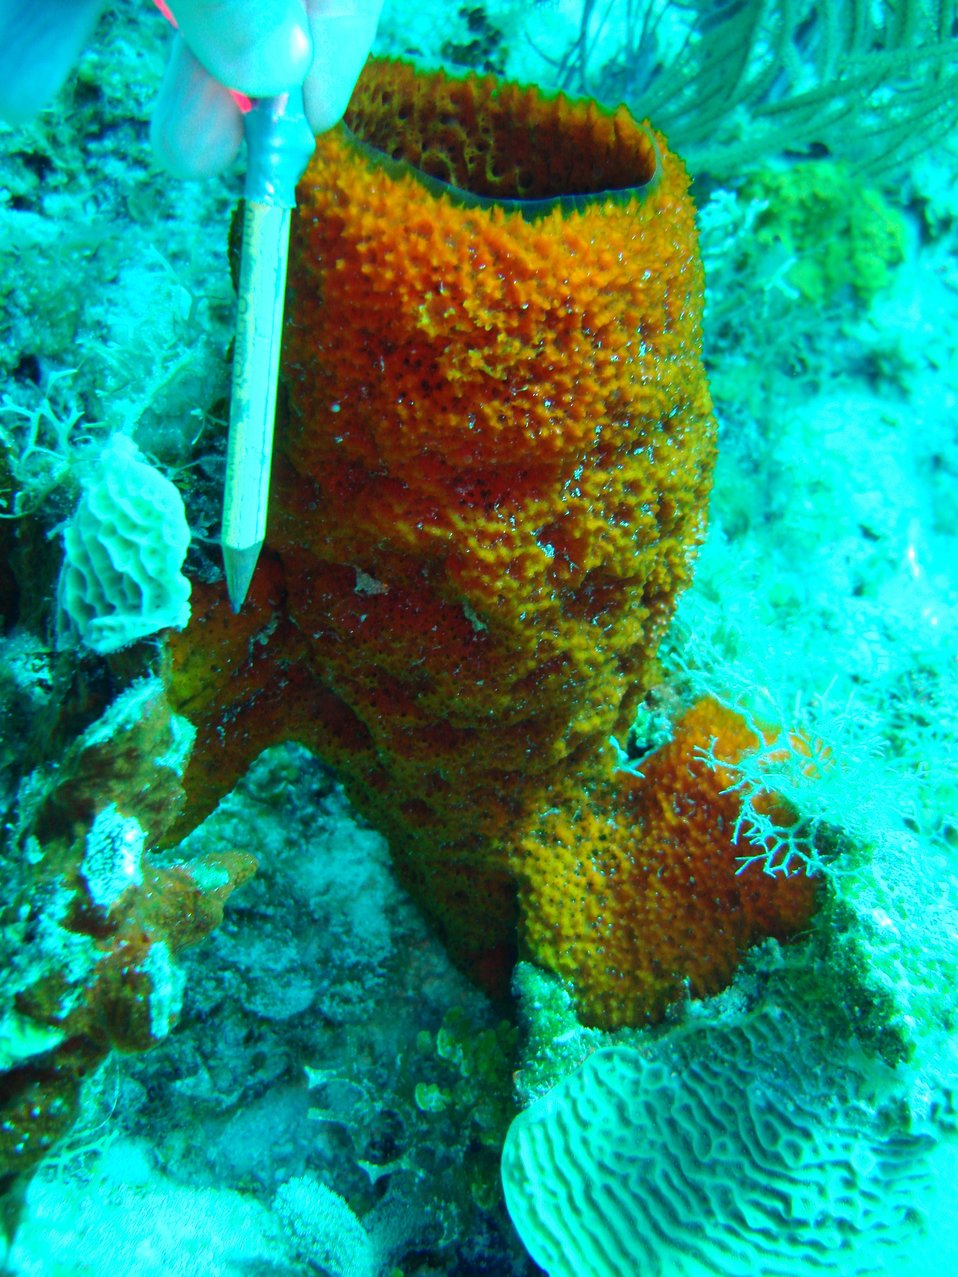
Sponge (Mycale jamacensis)